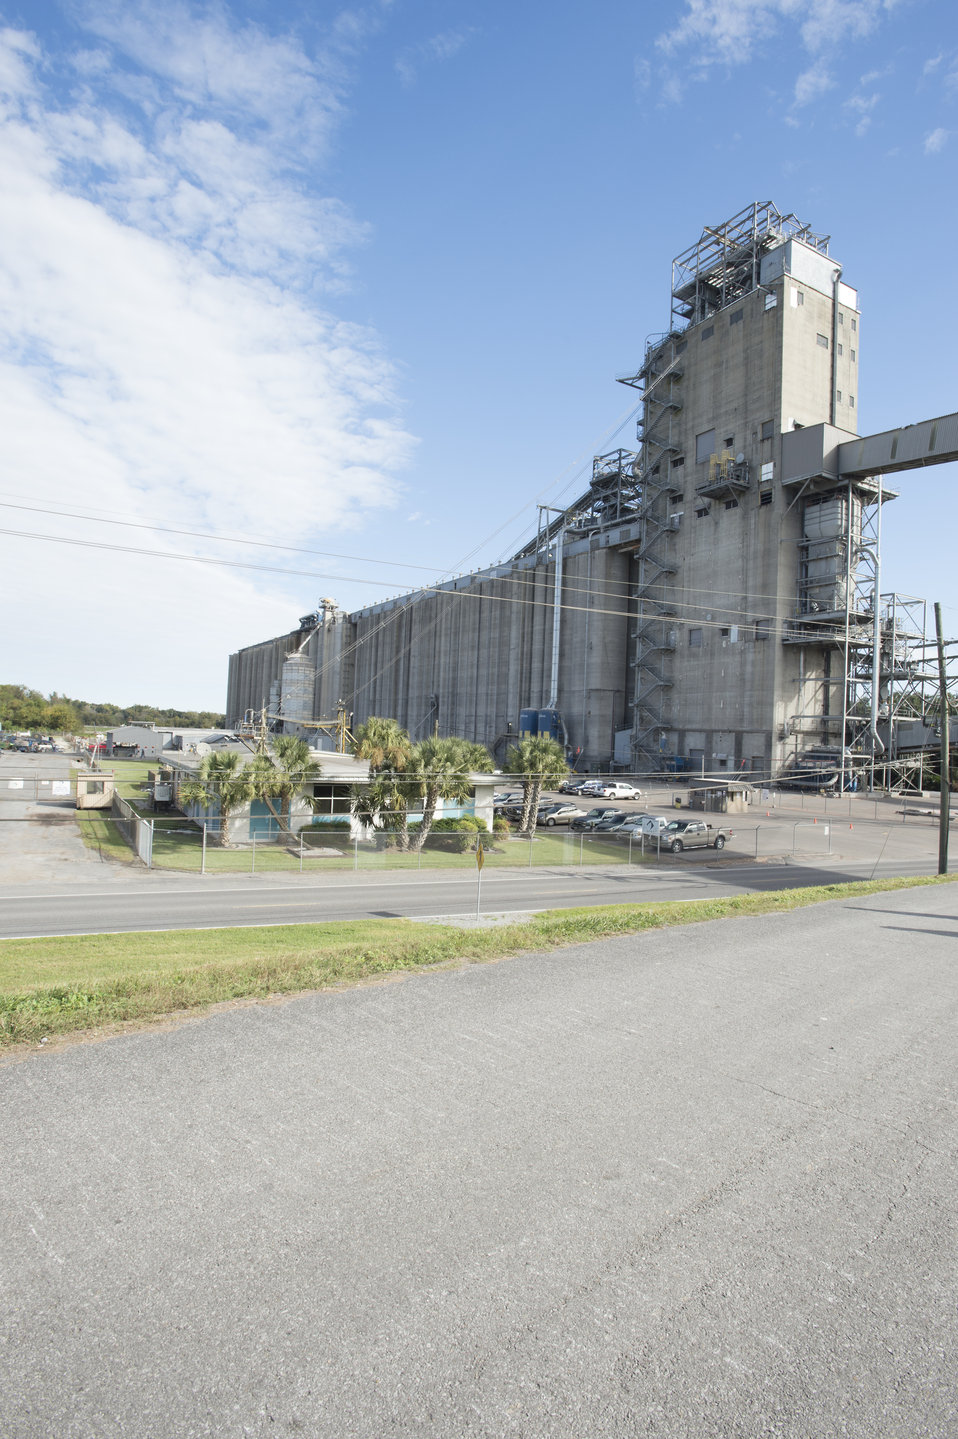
Storage facilities for grain transferred from barges awaiting export near the Port of New Orleans in in New Orleans, LA on Tuesday, Nov. 19, 2013.